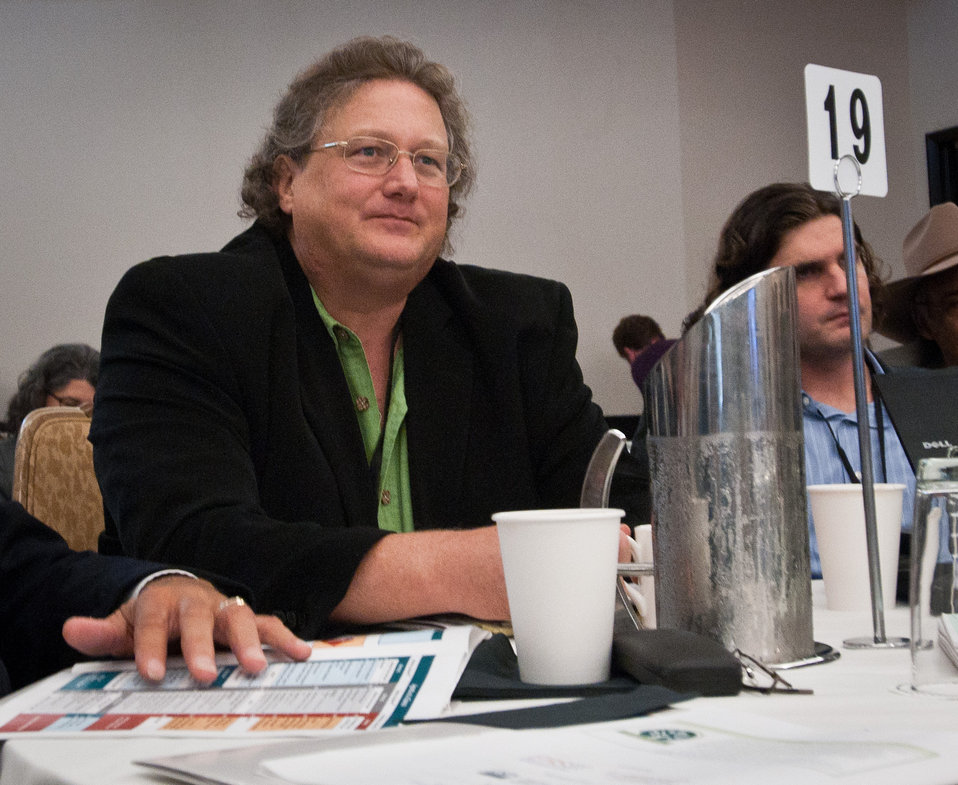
University of Wisconsin – Madison Extension’s Department of Agriculture and Applied Economics Professor and Community Development Specialist Steven Deller was one of several people to ask U.S. Department of Agriculture (USDA) Secretary Tom Vilsack, a question after the Secretary’s keynote address, at the Rural Wealth Creation and Livelihoods national conference for practitioners, researchers and policymakers, held at the Dupont Hotel, Washington DC, on Monday October 3, 2011. USDA partnered with the Ford Foundation to sponsor the conference.